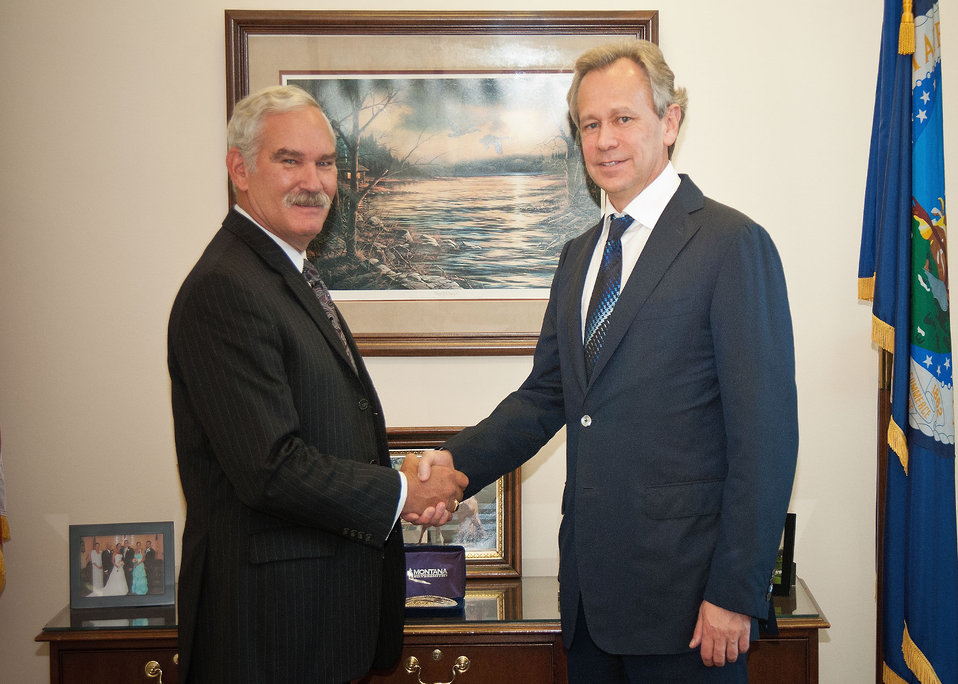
Agriculture Farm and Foreign Agricultural Services (FFAS) Under Secretary Michael Scuse meets with Ukranian Minister Mykola Prysiazhniuk at the U.S. Department of Agriculture in Washington, D.C. on Thursday, Sept. 20, 2012.